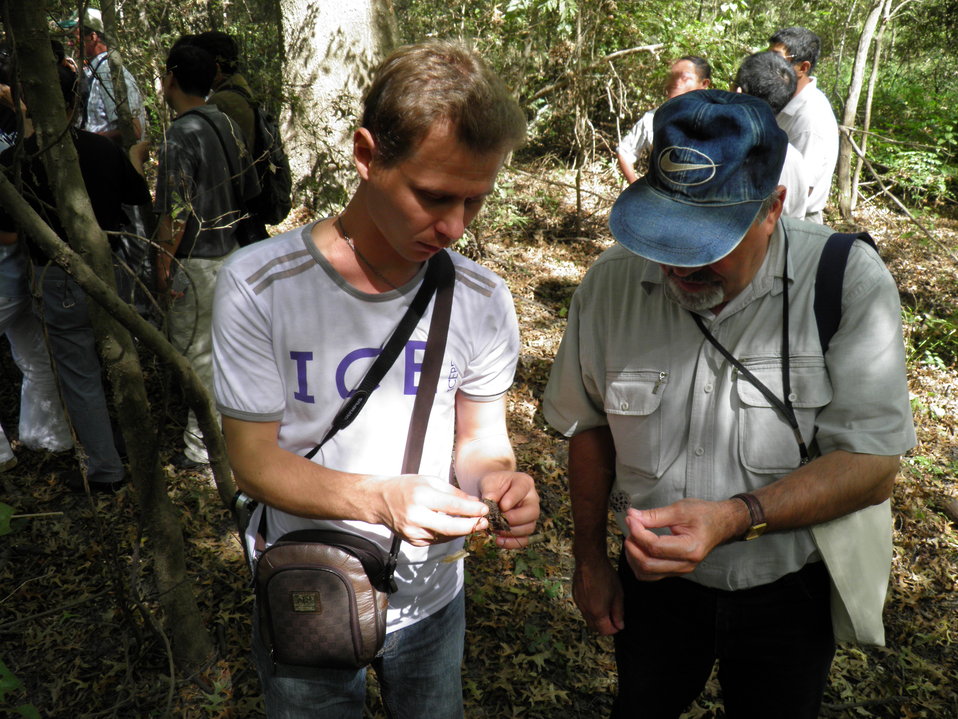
Examining Biota

Scientific exchanges allow U.S. and Russian conservationists to share best practices and lessons learned for conservation and management.